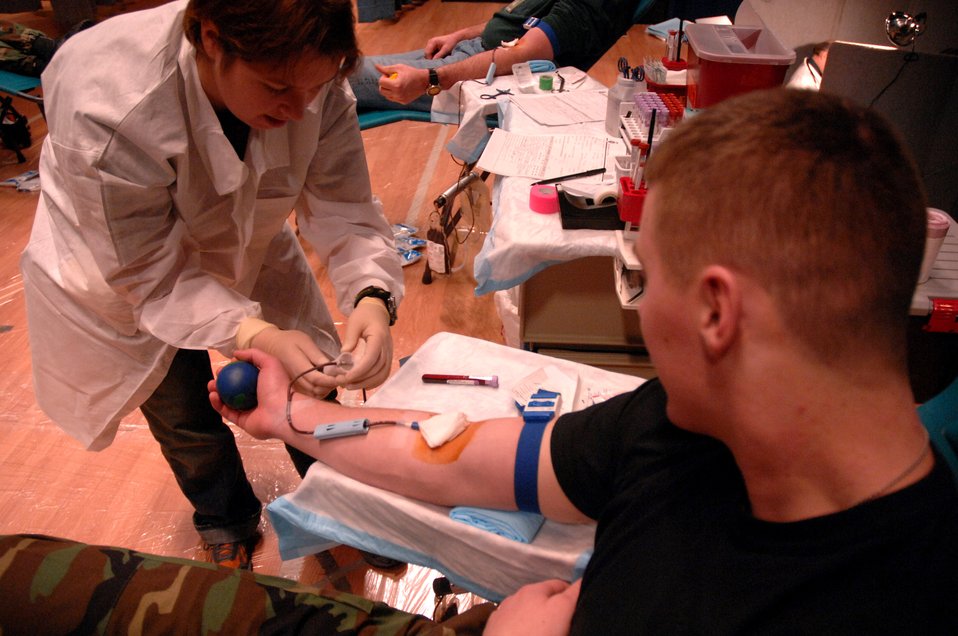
Blood donation

Susan Baker, manager of the Blood Bank of Alaska Fairbanks Center, collects blood from Airman Kyle Kremer during the Blood Bank's mobile blood drive Nov. 21 at Eielson Air Force Base, Alaska. The Blood Bank of Alaska supplies blood to military and civilian hospitals throughout Alaska. Airman Kremer is with the 354th Medical Group.